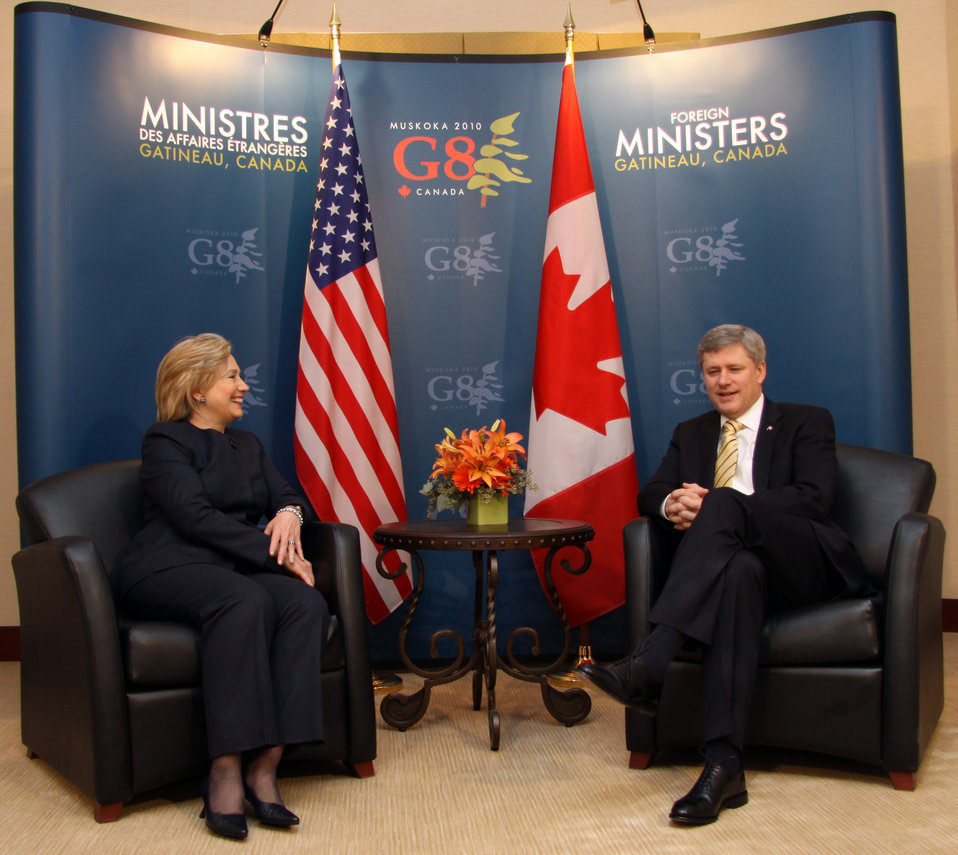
Secretary Clinton Meets With Canadian Prime Minister

U.S. Secretary of State Hillary Rodham Clinton meets with Canadian Prime Minister Stephen Harper during the G8 Foreign Ministers Meeting in Ottawa, Canada March 29, 2010.